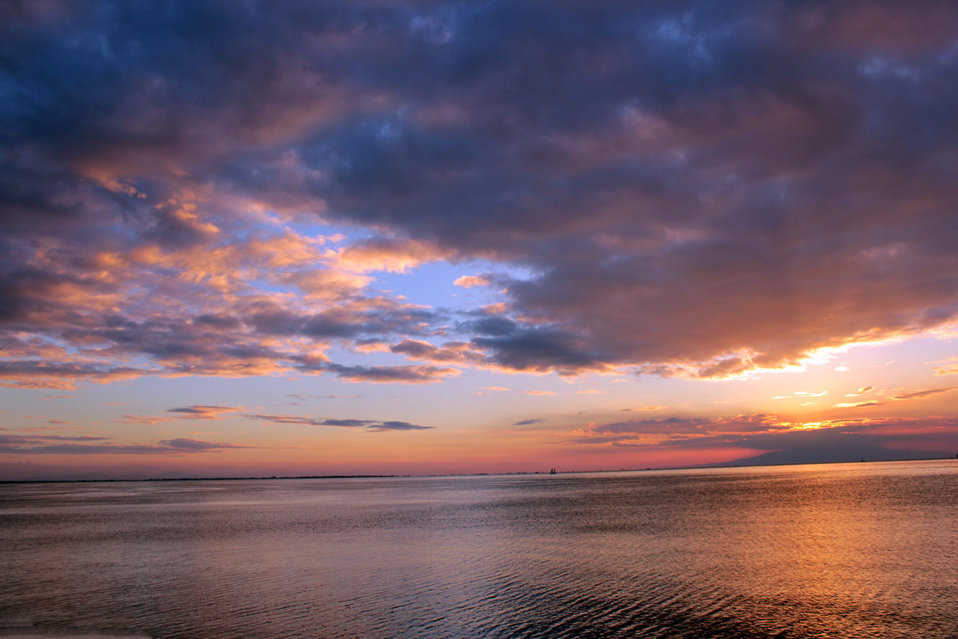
Sunset in manila bay 6

Sunset in manila bay.